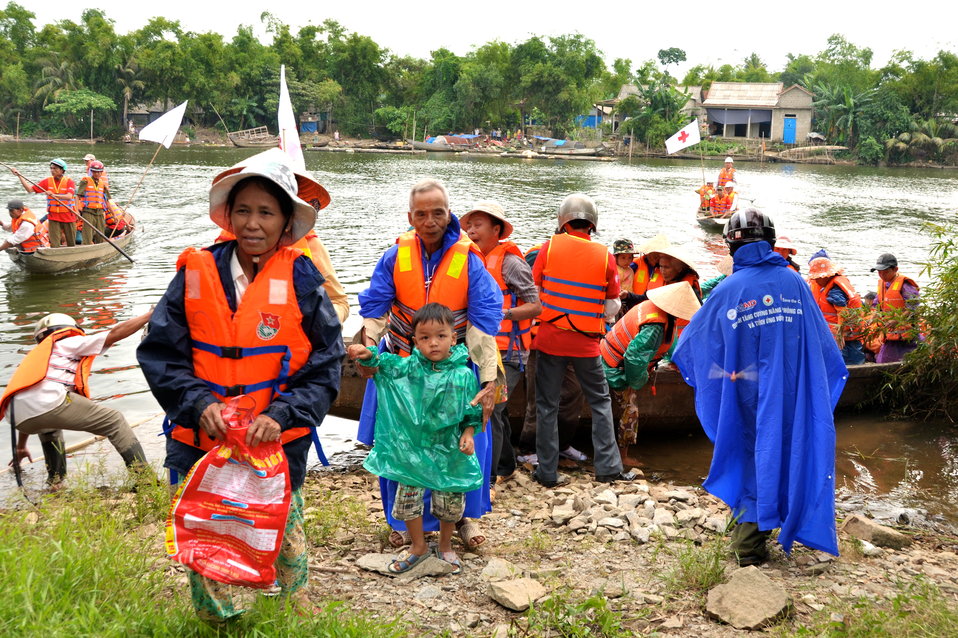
USAID and Save the Children support community evacuation drill and emergency preparedness in central Vietnam

Loc An Commune, Phu Loc District, Thua Thien Hue Province
December 4, 2012, Photo: Richard Nyberg, @USAIDVietnam